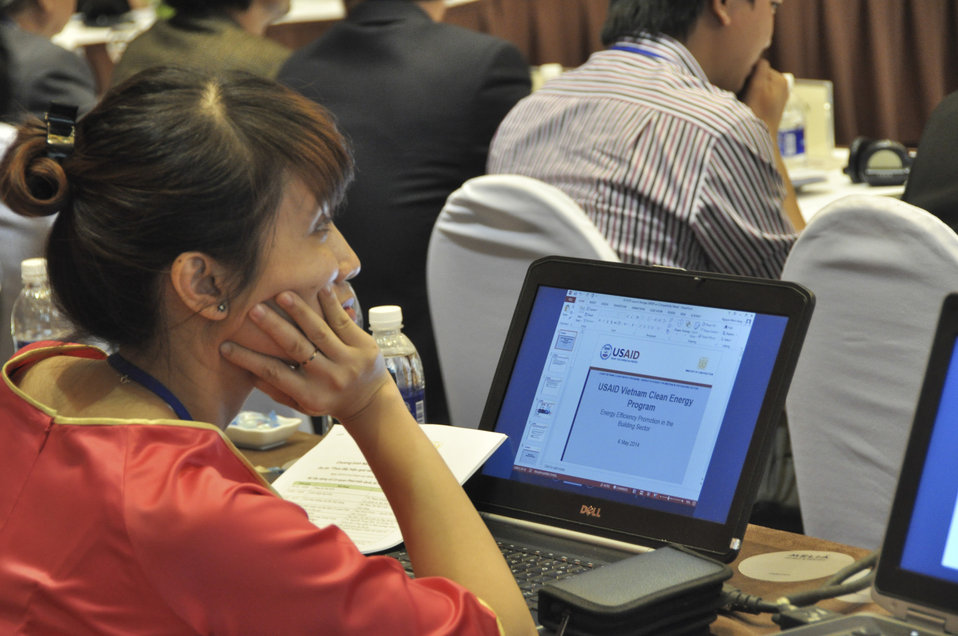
Launching of USAID Vietnam Clean Energy Program.

Hanoi, May 6, 2014.